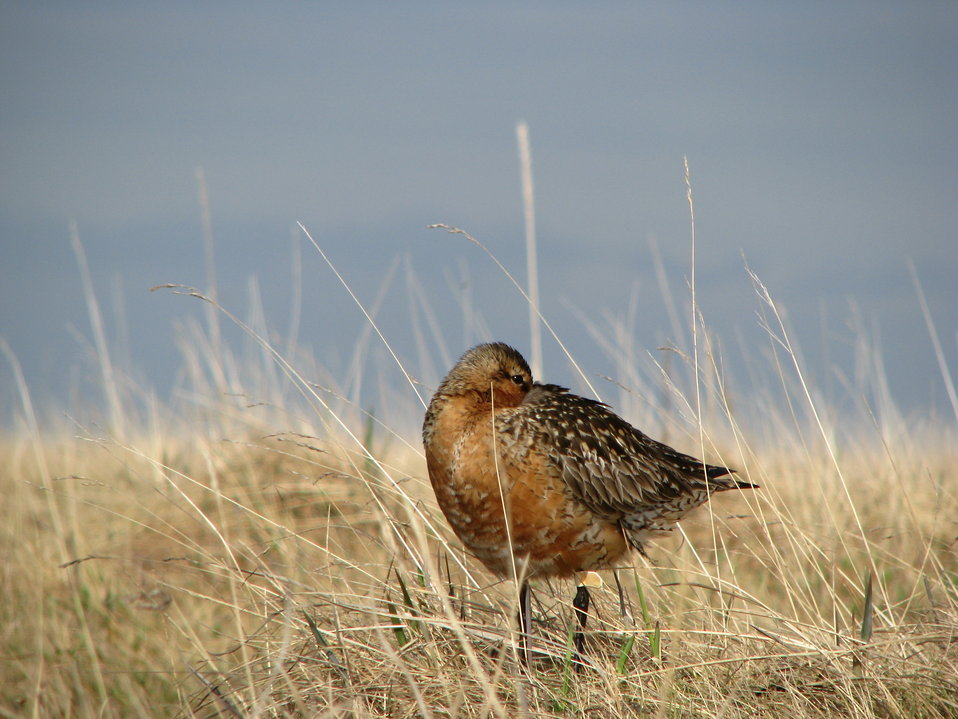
Bar-tailed Godwit

Yukon Delta NWR
This guy was banded and had a flag!!